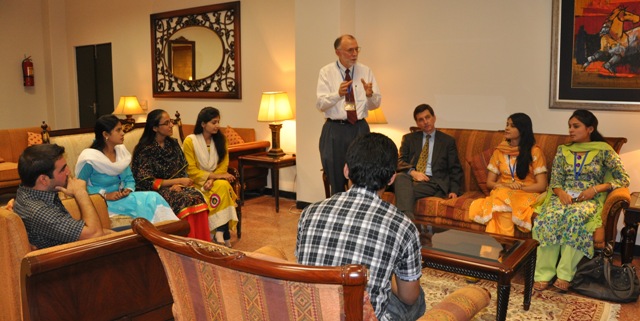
U.S. Agency for International Development (USAID) Mission Director Dr. Andrew Sisson talking to FCC students.